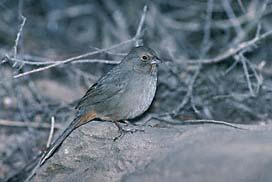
Inyo California towhee

The Inyo California towhee (Pipilo crissalis eremophilus) is a bird found in the southern Argus Mountains of the Mojave Desert in Inyo County, California. It is grey-brown in color with the tail, wings, and crown often darker and tinged with a reddish coloration. It is also omnivorous, meaning it feeds on seeds, grain, invertebrates and fruit. The towhee requires dense riparian vegetation and adjacent upland habitat in which to forage for food, nest, and receive protections from predators and shade from the desert sun.